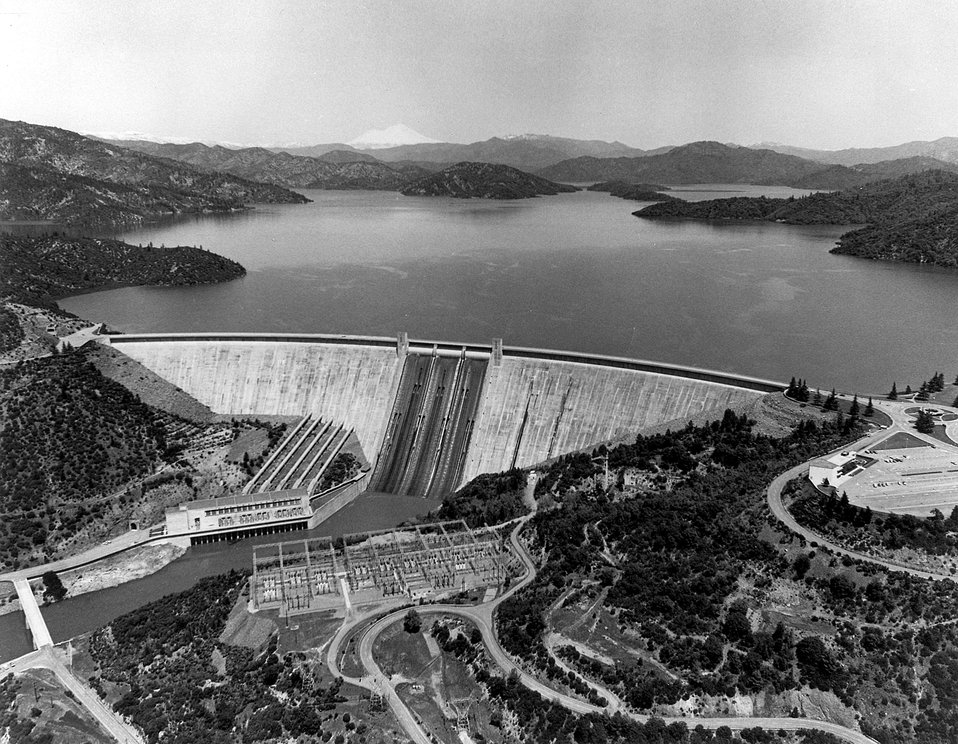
Aerial view of Shasta Dam and Lake on the Sacramento River north of Redding, California. c. 1977